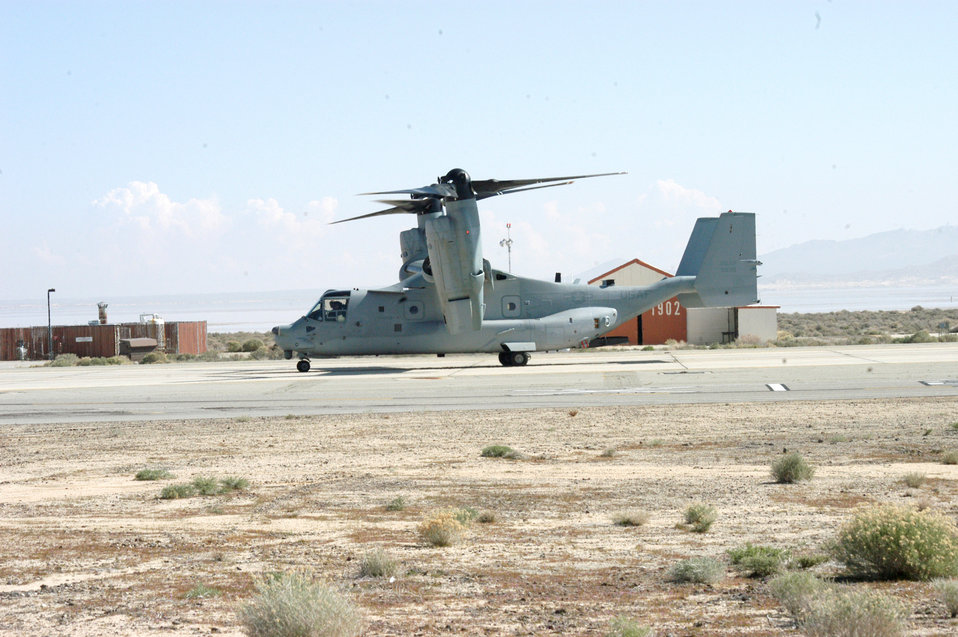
Air Force receives third Osprey

The third CV-22 Osprey test aircraft arrived at Edwards Air Force Base, Calif., Feb. 26, 2005. The aircraft can take off like a helicopter and fly like an airplane.